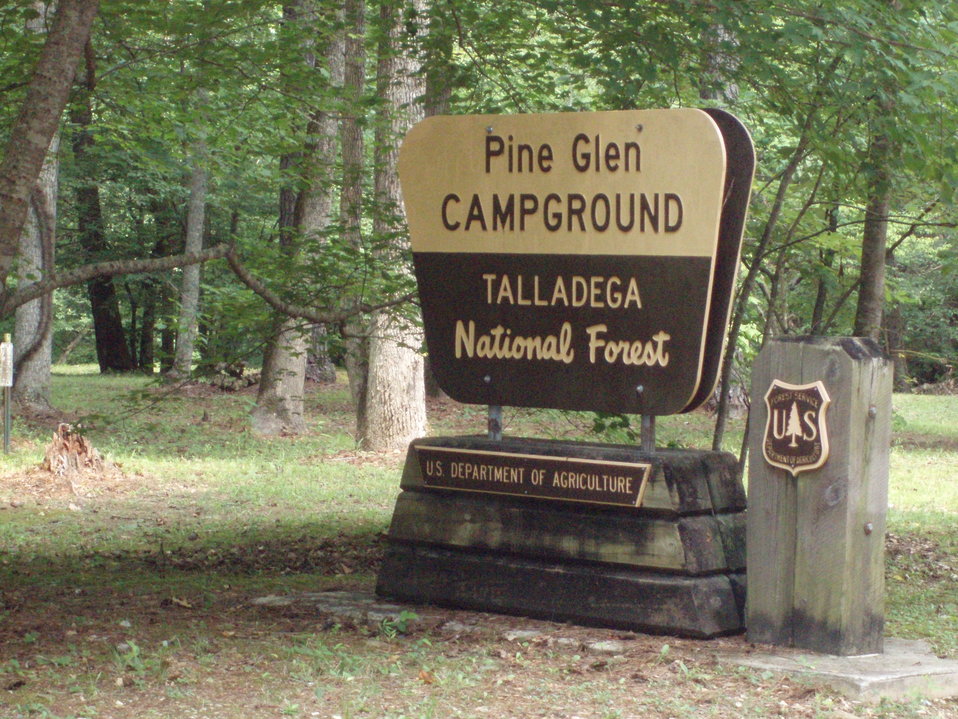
Talladega campground sign

Volunteers on the Talladega National Forest work to help keep forest recreation areas like the Pine Glen campgrounds clean and ready for visitors.